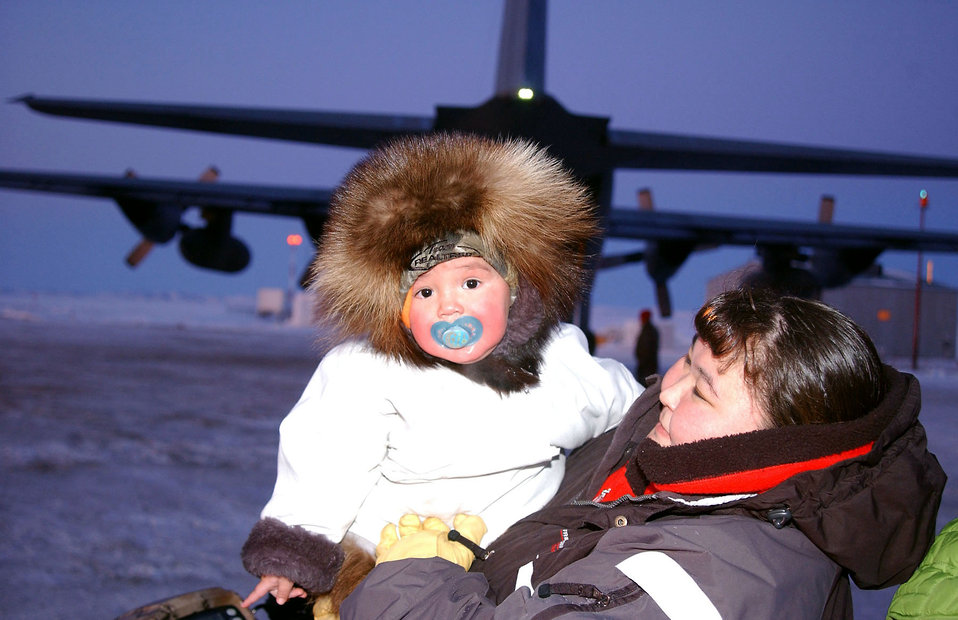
Alaska Guard continues Operation Santa Claus tradition

A mother and daughter help National Guard members load a C-130 Hercules at the end of a successful Operation Santa Claus visit Dec. 6 in Kivalina, Alaska. Operation Santa Claus, an Alaska National Guard community relations and support program, provides toys, books and school supplies for young people in communities across the state.